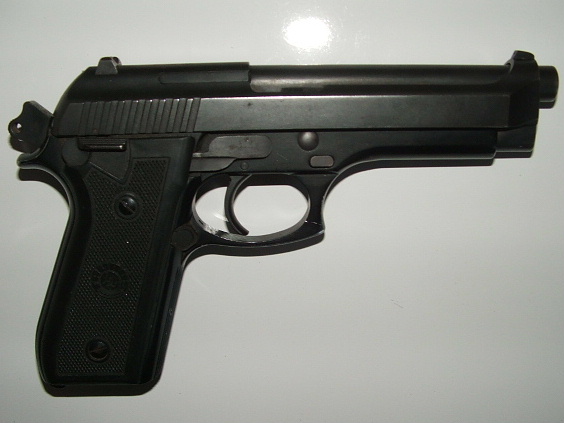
Português: Pistola Taurus com o cão puxado em posicionamento de ação simples